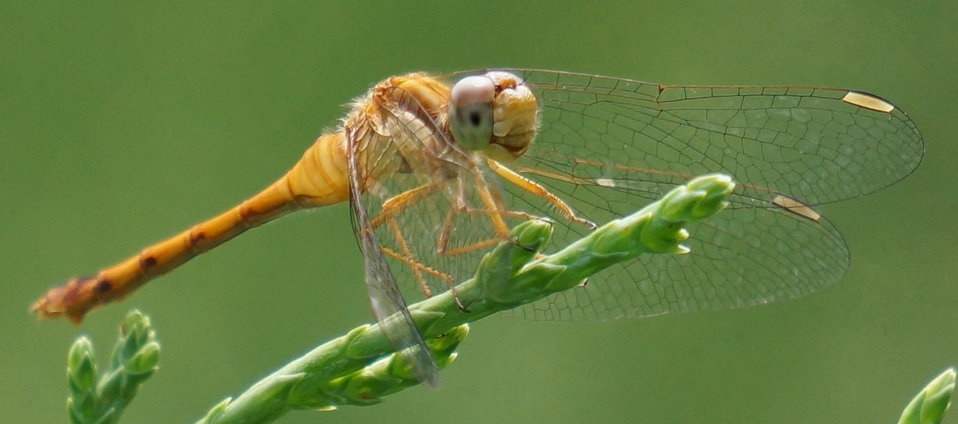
Dragonfly - Two Ponds